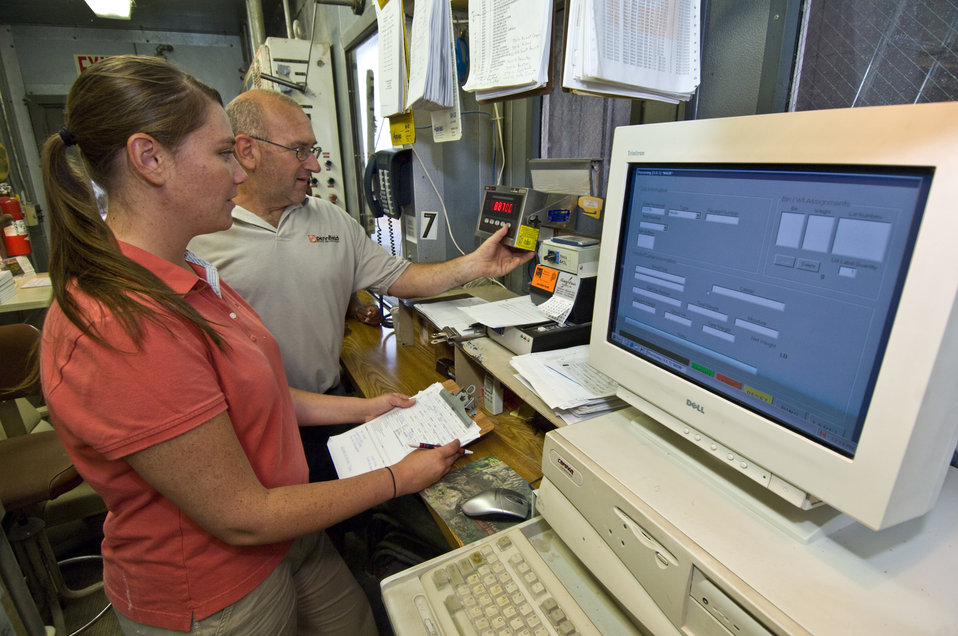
U.S. Department of Agriculture (USDA) Grain Inspection, Packers, and Stockyards Administration (GIPSA) resident agent Jaime Ziem in the process of obtaining a check weight of poultry feed at a feed mill in Paradise, Pennsylvania on July 23, 2008. GIPSA is a USDA agency that facilitates the marketing of livestock, poultry, meat, cereals, oilseeds, and related agricultural products, and promotes fair and competitive trading practices for the overall benefit of consumers and American agriculture.